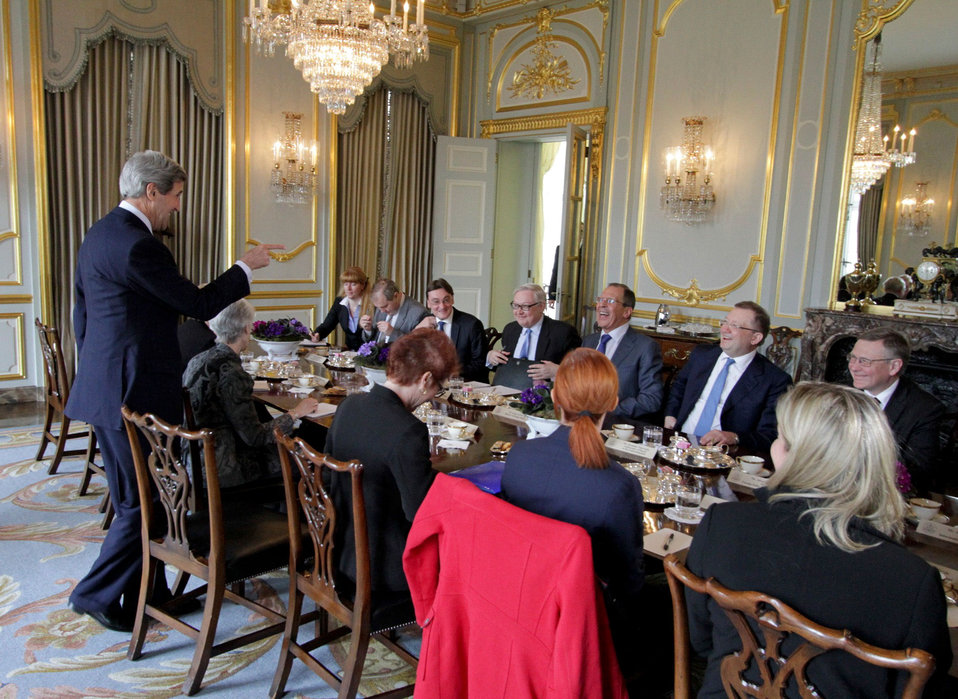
Secretary Kerry Meets With Russian Foreign Minister Lavrov

U.S. Secretary of State John Kerry meets with Russian Foreign Minister Sergey Lavrov at the Winfield House, the residence of the U.S. Ambassador, in London, United Kingdom, April 10, 2013.